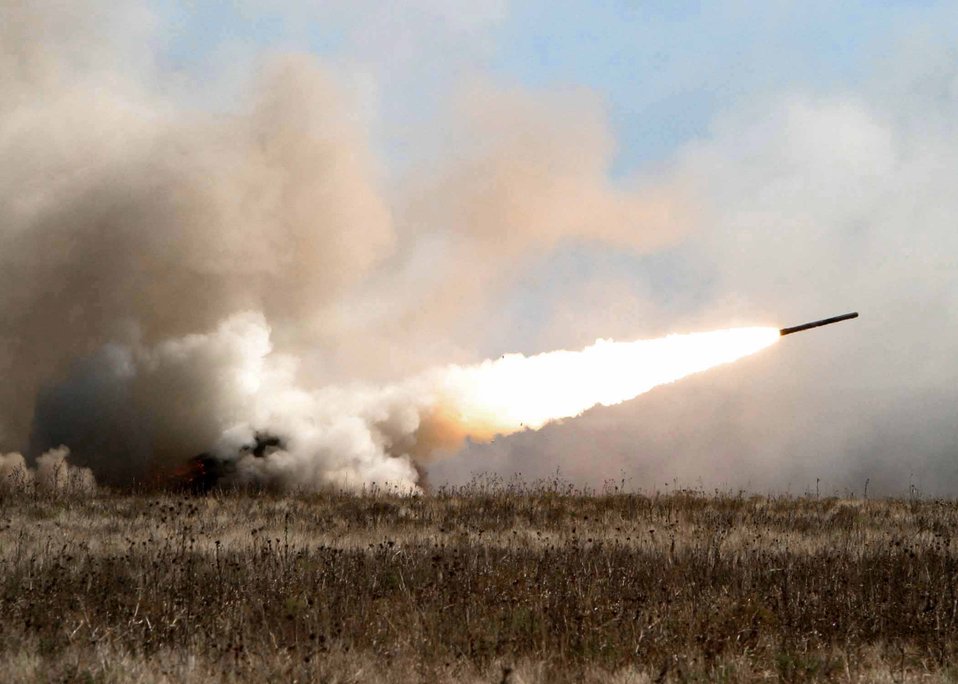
Fast fire

FORT SILL, Okla. -- A High Mobility Artillery Rocket System fires a six-rocket volley of practice rounds after being flown from Redstone Arsenal in Huntsville, Ala., on Nov. 19. The firing portion of the demonstration showed the final step of the rocket launcher's intended use on the battlefield. Because the HIMARS is transportable by C-130 Hercules, it can be moved for fast response.